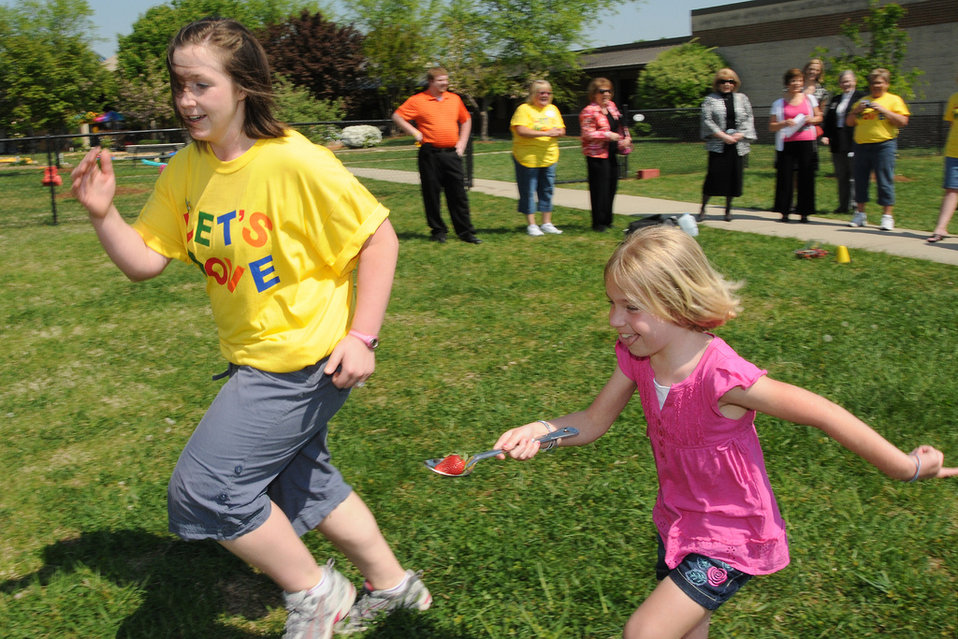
Lets Move - DSC 2197

Physical Education Teacher Mandy Davis runs with a Thomasville Primary School student in the “strawberry in a spoon race” as part of their Let’s Move program inspired by First Lady Michelle Obama. The school received a USDA HealthierUS School Challenge Gold Award.